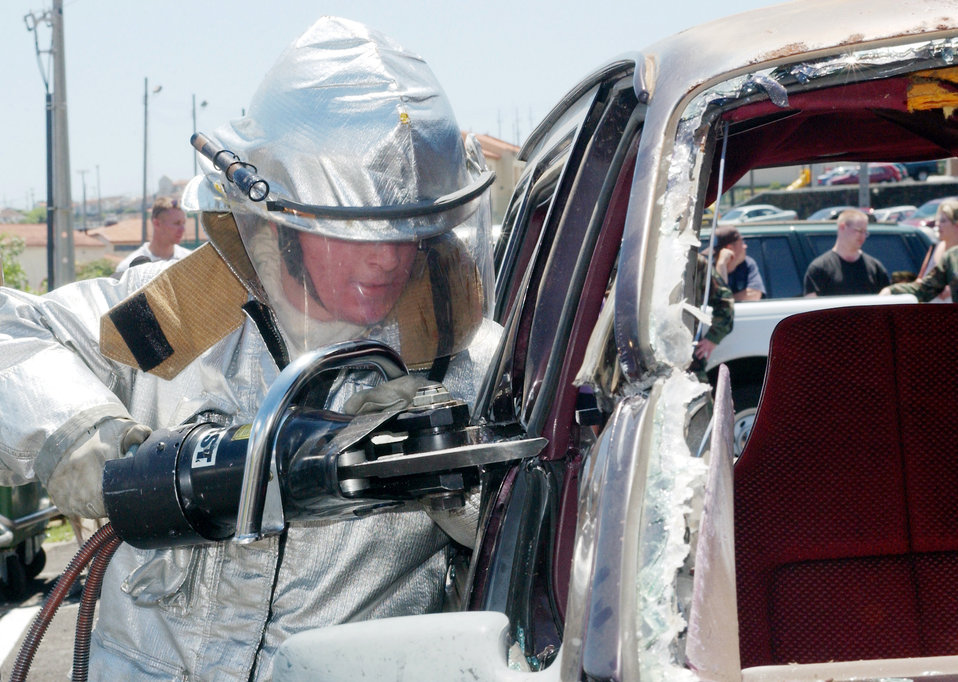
Rodeo style

LAJES FIELD, Azores -- Airman 1st Class David Hadley uses the jaws of life to break the